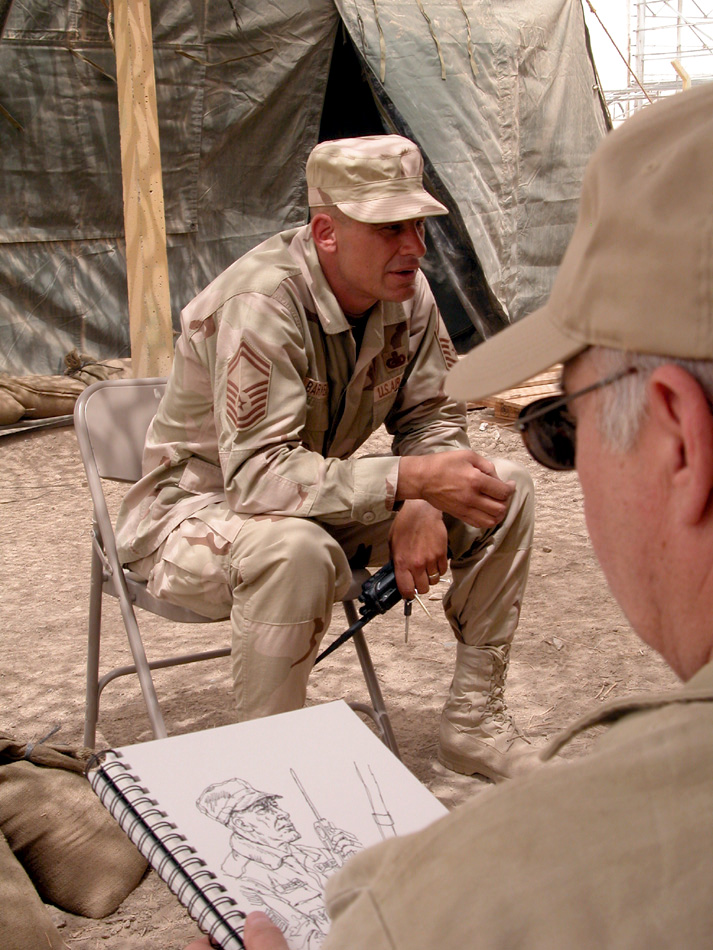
Still life

OPERATION IRAQI FREEDOM (AFPN) -- Aviation artist John Witt sketches Senior Master Sgt. Keith D. Barkema, a fuels superintendent for the 407th Air Expeditionary Group at Tallil Air Base in southern Iraq. Witt was one of four artists visiting the austere, frontline air base on behalf of the Air Force Art Program. The program allows artists to document and capture Air Force operations in war and peacetime.